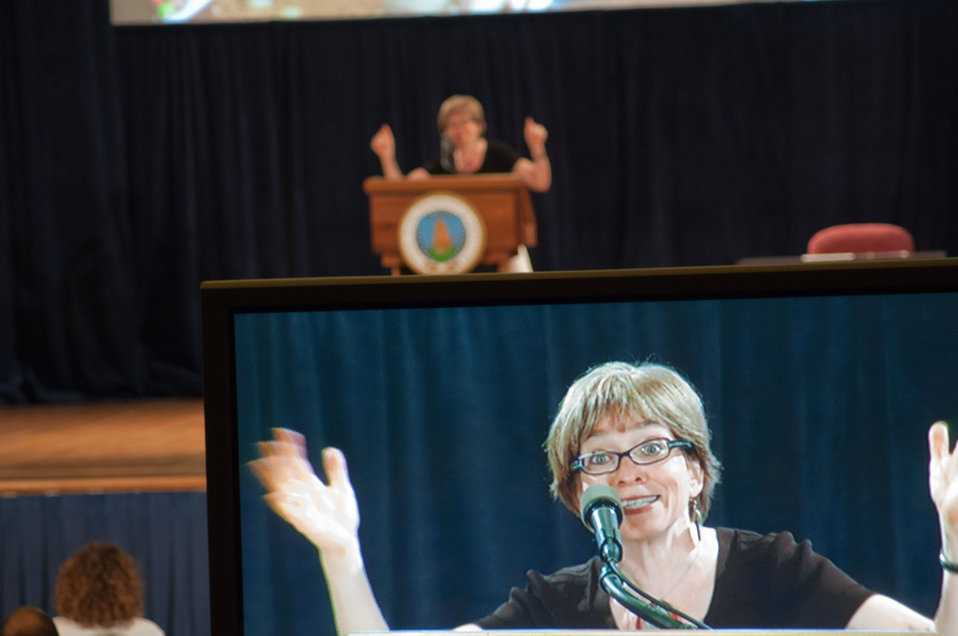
U.S. Equal Employment Opportunity Commission, Commissioner Chai Feldblum was the guest speaker for the U.S. Department of Agriculture (USDA) Lesbian, Gay, Bisexual and Transgender (LGBT) Pride Observance Program on Thursday, June 2, 2011, in the Jefferson Auditorium, Washington, DC.